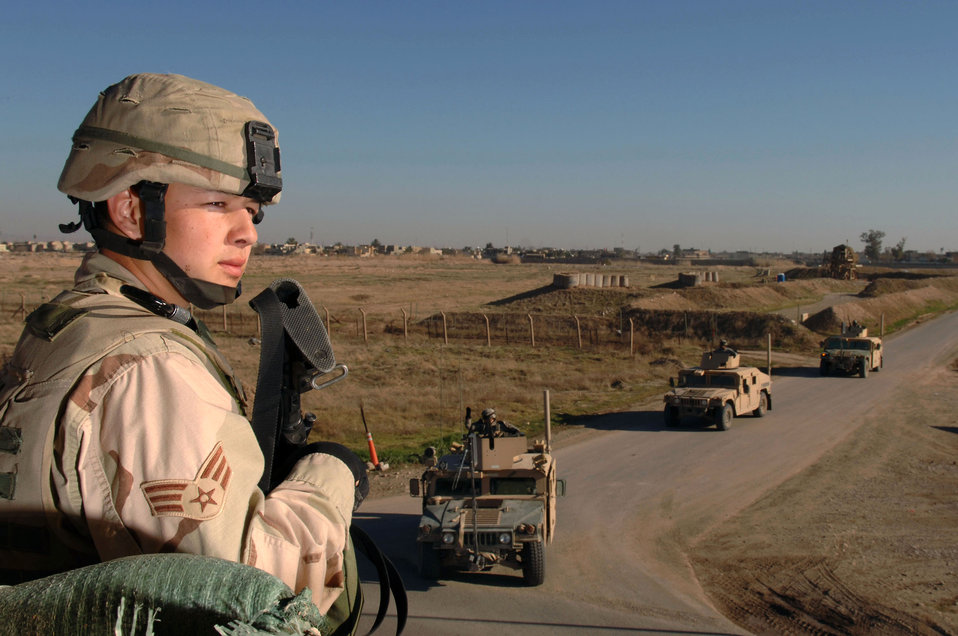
Guarding the perimeter

Senior Airman Richard Rodriguez checks the perimeter for insurgents as Army convoys come back from patrols Jan. 24 at Kirkuk Regional Air Base, Iraq. Airman Rodriguez is a 506th Expeditionary Security Forces Squadron perimeter guard who is deployed from the 5th SFS at Minot Air Force Base, N.D.